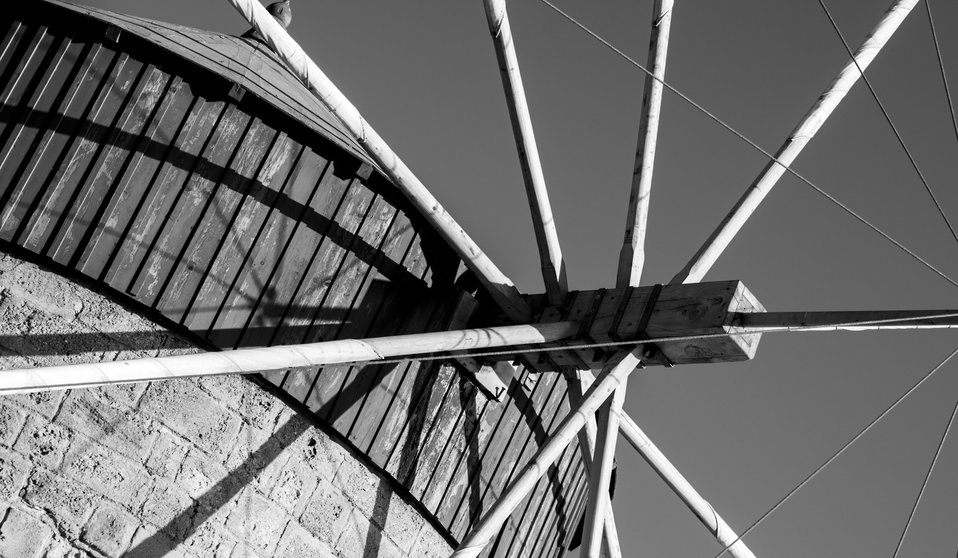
Geometric windmill

Angled shot of windmill in rhodes.